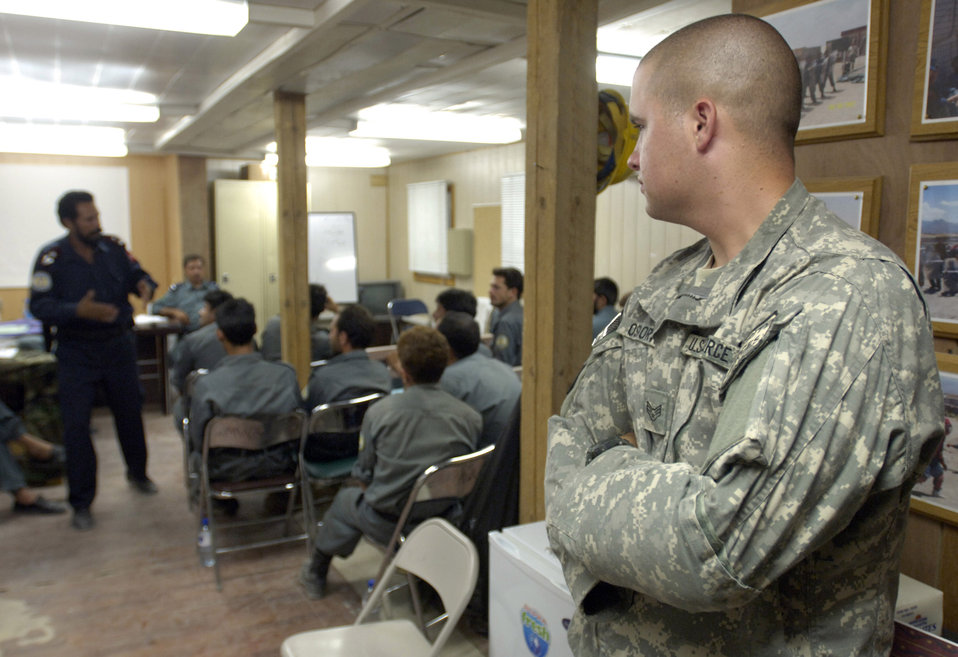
Afghans train Afghans with American mentorship

Staff Sgt. Zachary Osborne listens as Afghan National Police instructor Maj. Muhammad Omar teaches a class on patrol procedures to Afghan National Auxiliary Police trainees Sept. 3 at forward operating base Mehtar Lam in Afghanistan's Laghman province. Sergeant Osborne is an Air Force security forces member deployed from Malmstrom Air Force Base, Mont. He is assigned to the Laghman Provincial Reconstruction Team police technical advisory team and works as a mentor to the Afghan instructors. The course is now being taught entirely by ANP instructors. The PTAT's role has now shifted to monitoring the course's progress and mentoring the ANP instructors.